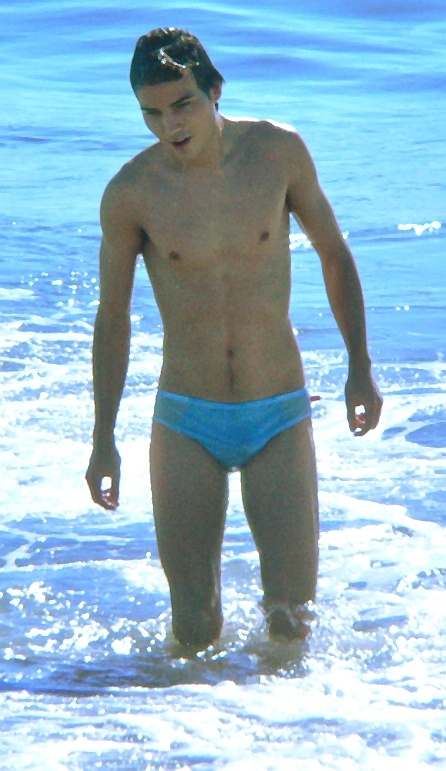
Young man in swimwear (1030790)